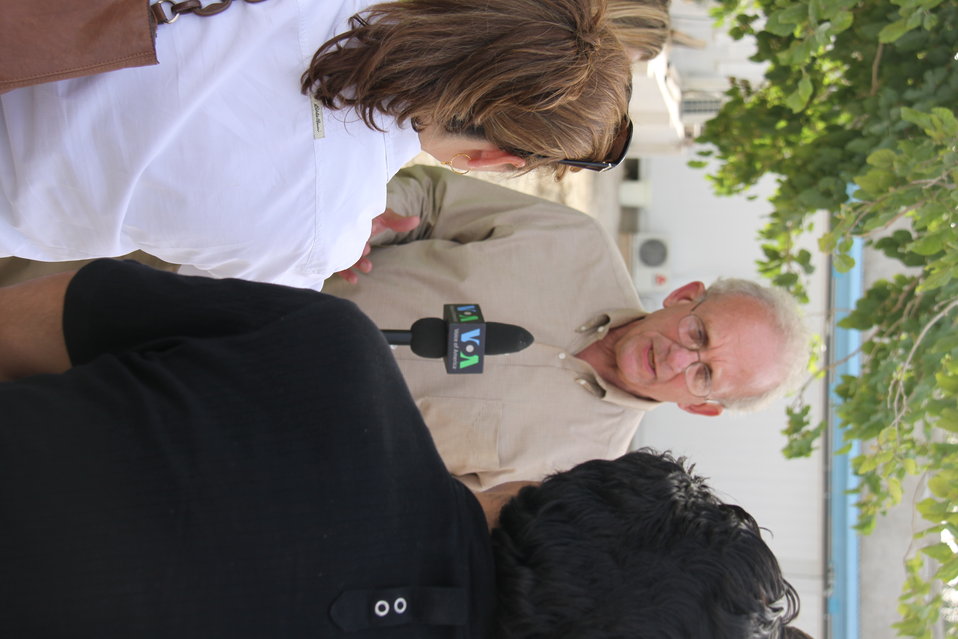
Meeting with Local Leaders in Kandahar